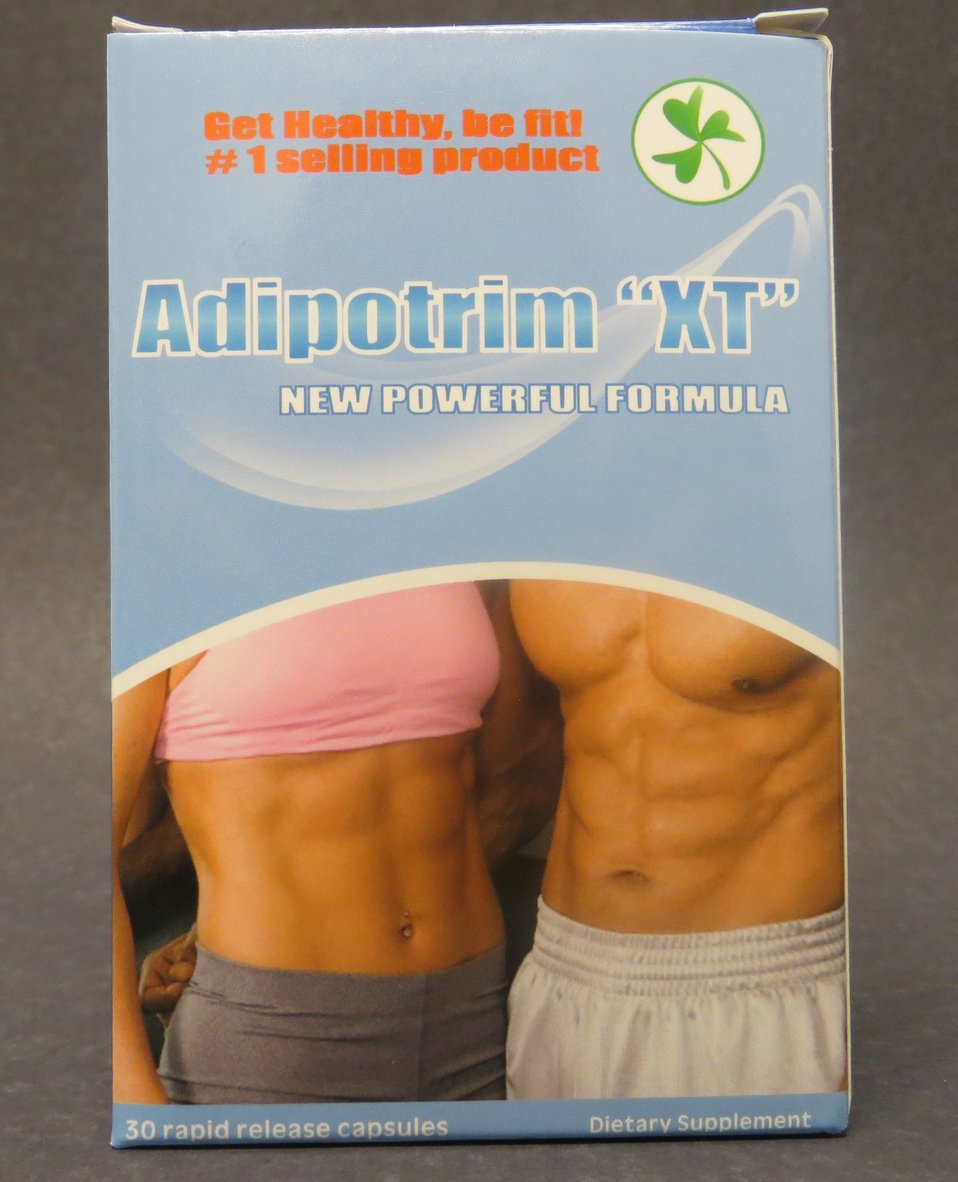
Adipotrim XT 11-21-2013 fluoxetine

November 21, 2013 - The FDA is advising consumers not to purchase or use 'Adipotrim XT,' a product promoted and sold for weight loss. The product was found to contain undeclared fluoxetine. For more information, go to www.fda.gov/Safety/Recalls/ucm376157.htm

And read this Consumer Update: Beware of Fraudulent ‘Dietary Supplements’